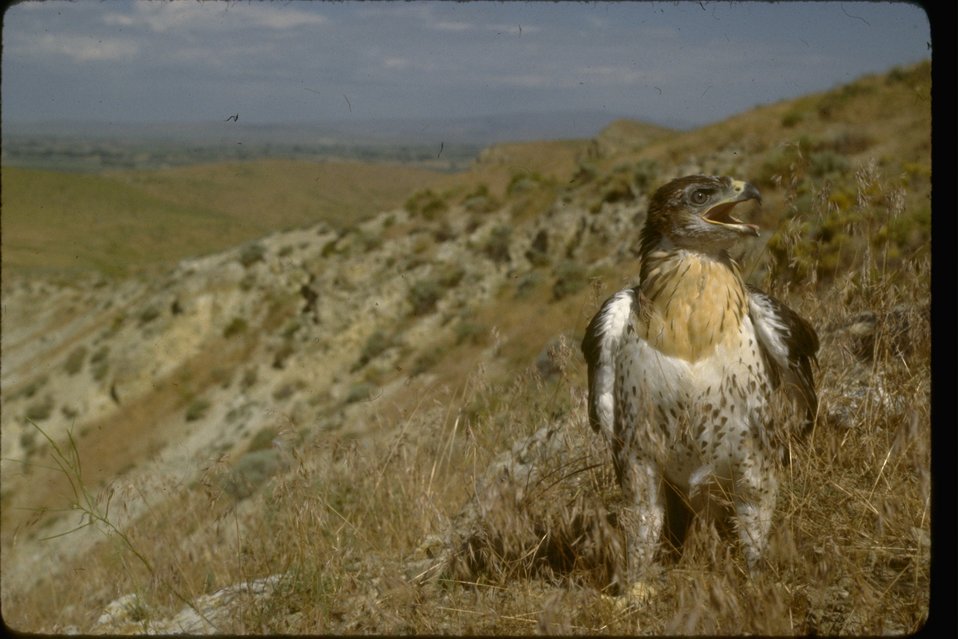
Ferruginous rough-legged Hawk.